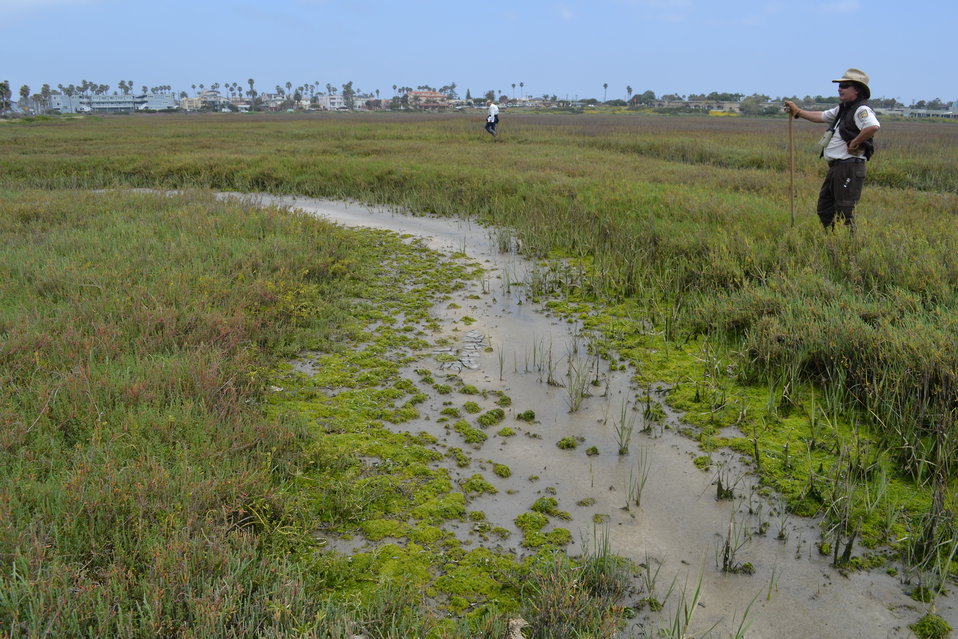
Refuge Manager Brian Collins takes a break from nest searching